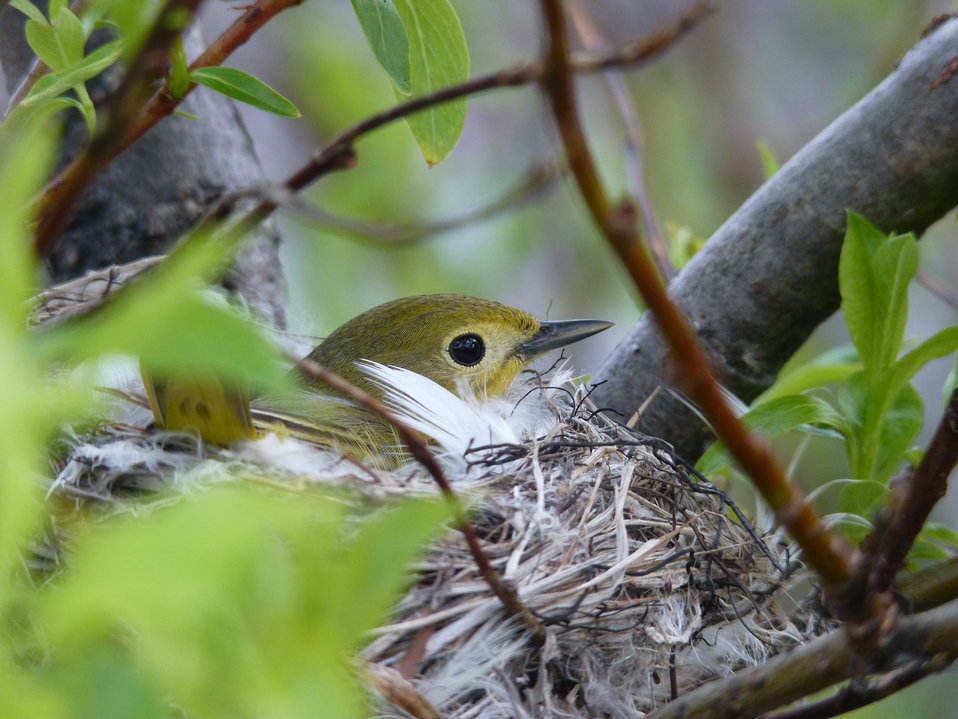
Yellow warbler on nest

Andreafsky wilderness, Yukon Delta National Wildlife Refuge